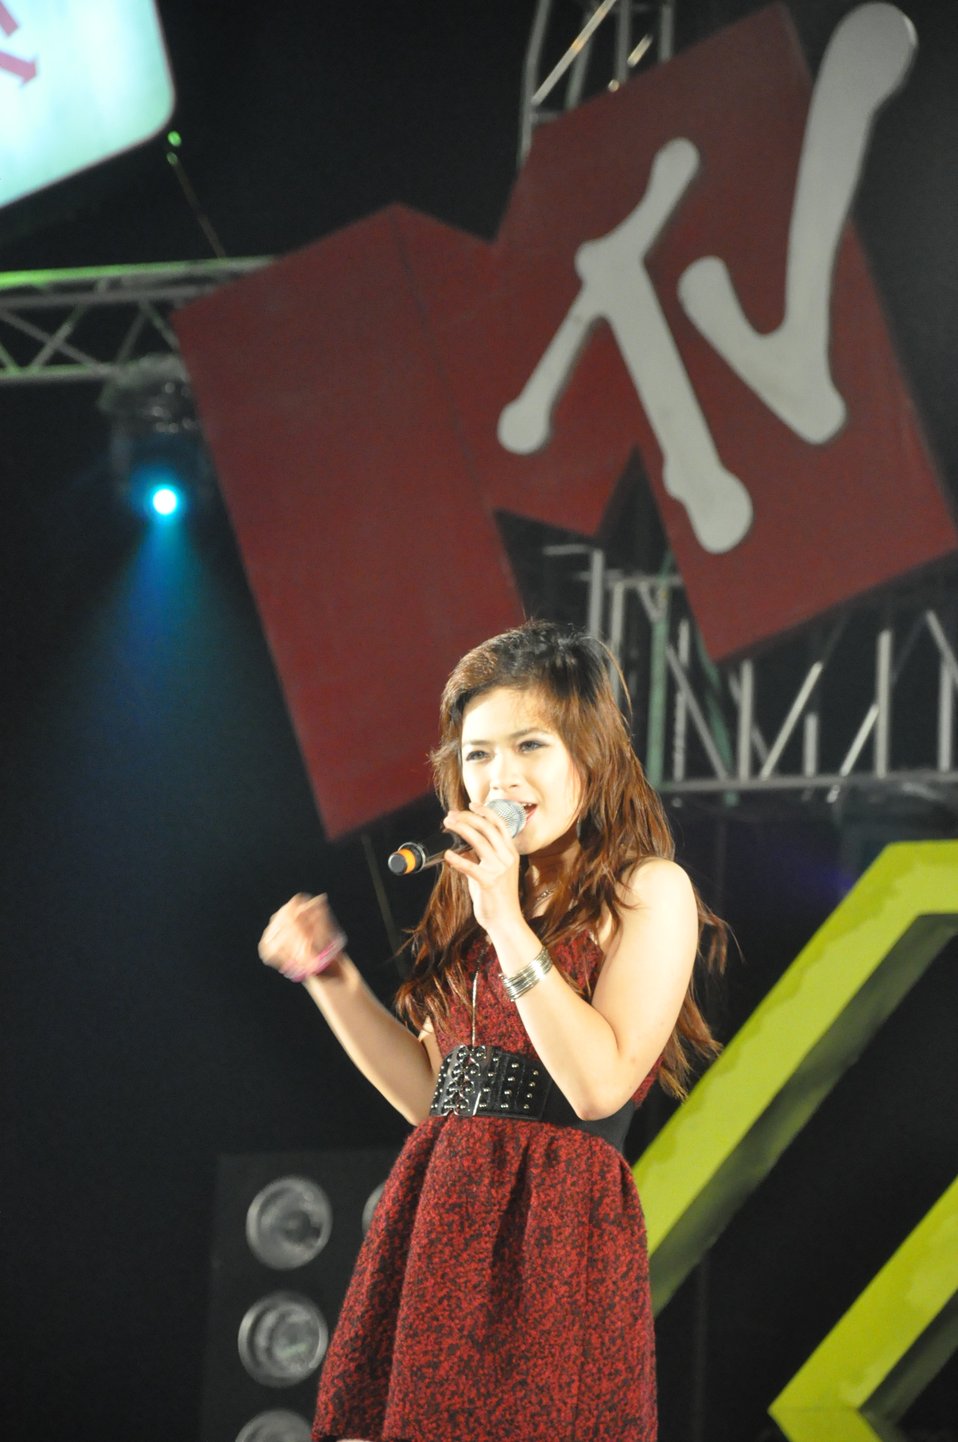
USAID and MTVEXIT Concert Halong Bay

Halong Bay Concert, April 4, 2010